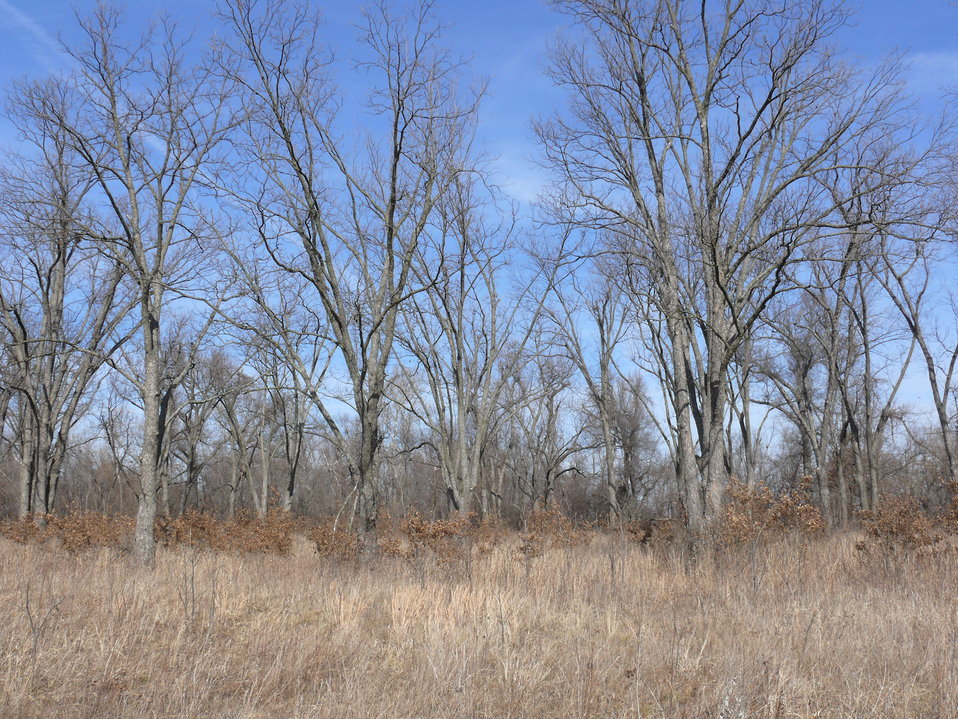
Habitat in Cherokee County, Kansas

This forested area in Cherokee County, Kansas, is part of newly acquired acreage which will provide habitat for grassland and other species of migratory birds, aquatic habitat for waterfowl and other aquatic species. The restoration acquisition was made possible through the combined efforts of the US Fish and Wildlife Service, Kansas Department of Health and Environment and Kansas Department of Wildlife, Parks and Tourism.